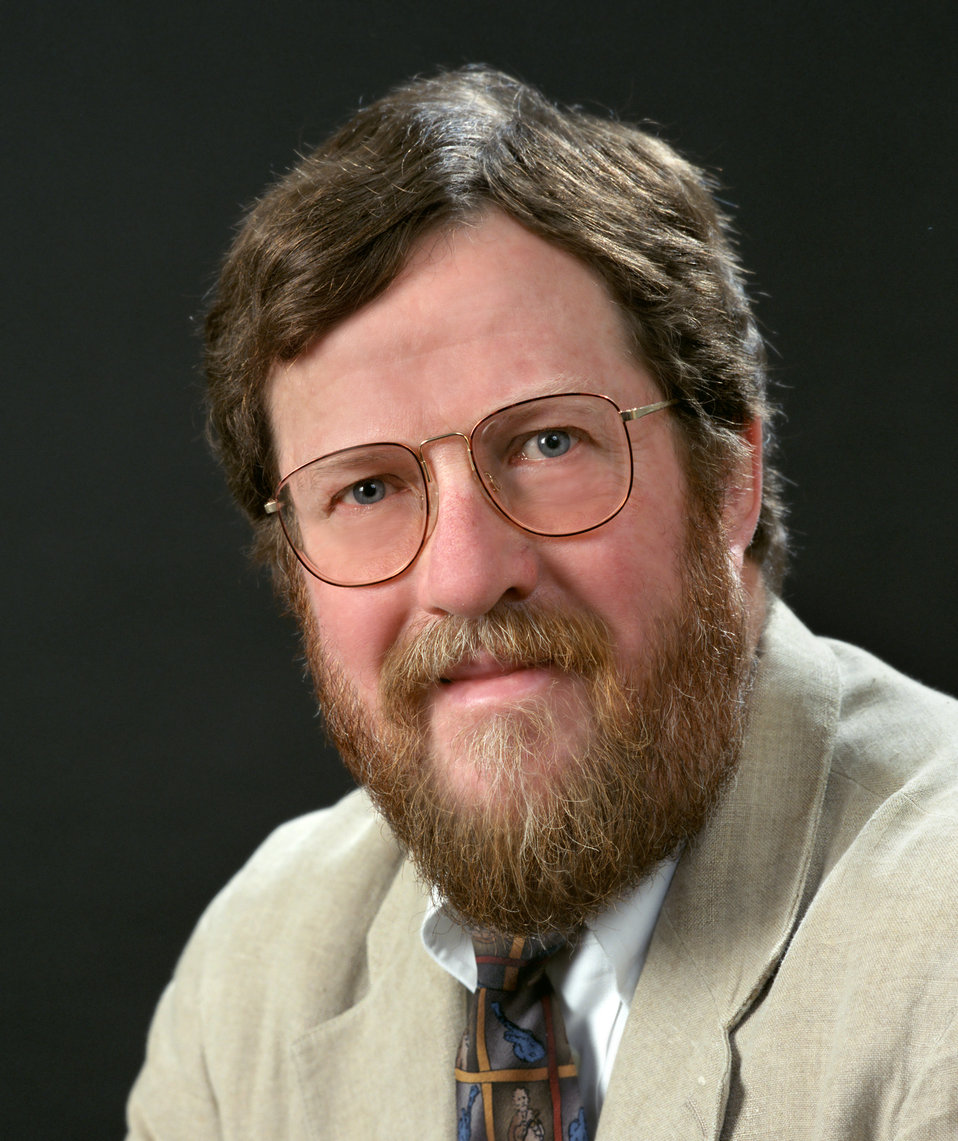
This is a photograph of Dennis L. McDowell, former Executive Director of the Division of Professional Development and Evaluation, DPDE, 1986-2003.